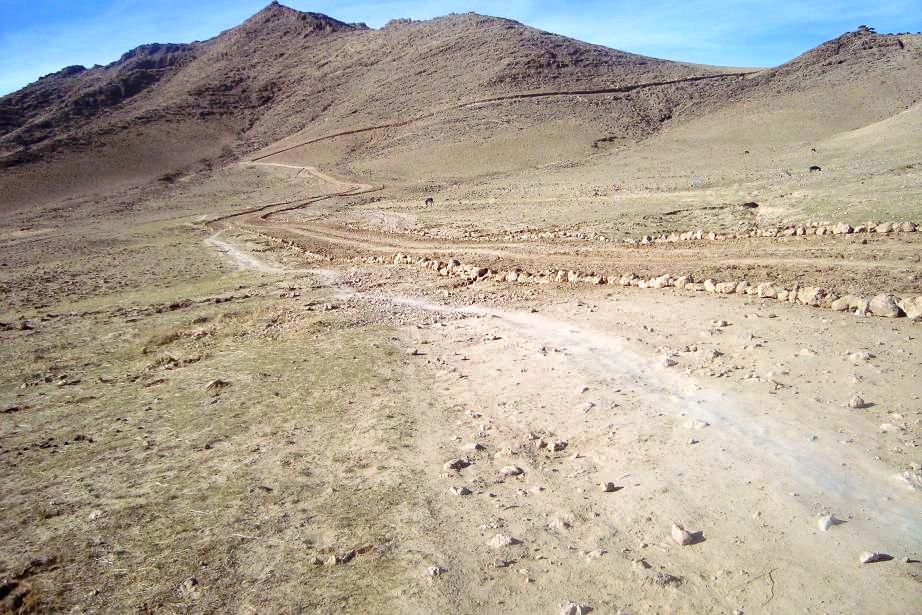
completed road 1km